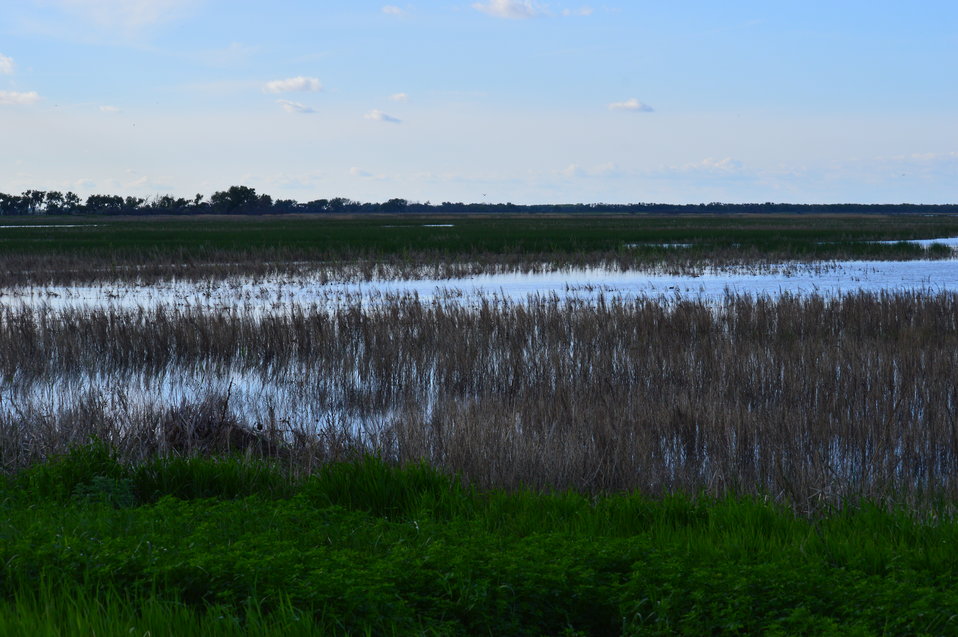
View over Sand Lake

Scenery and wildlife at Sand Lake National Wildlife Refuge in South Dakota